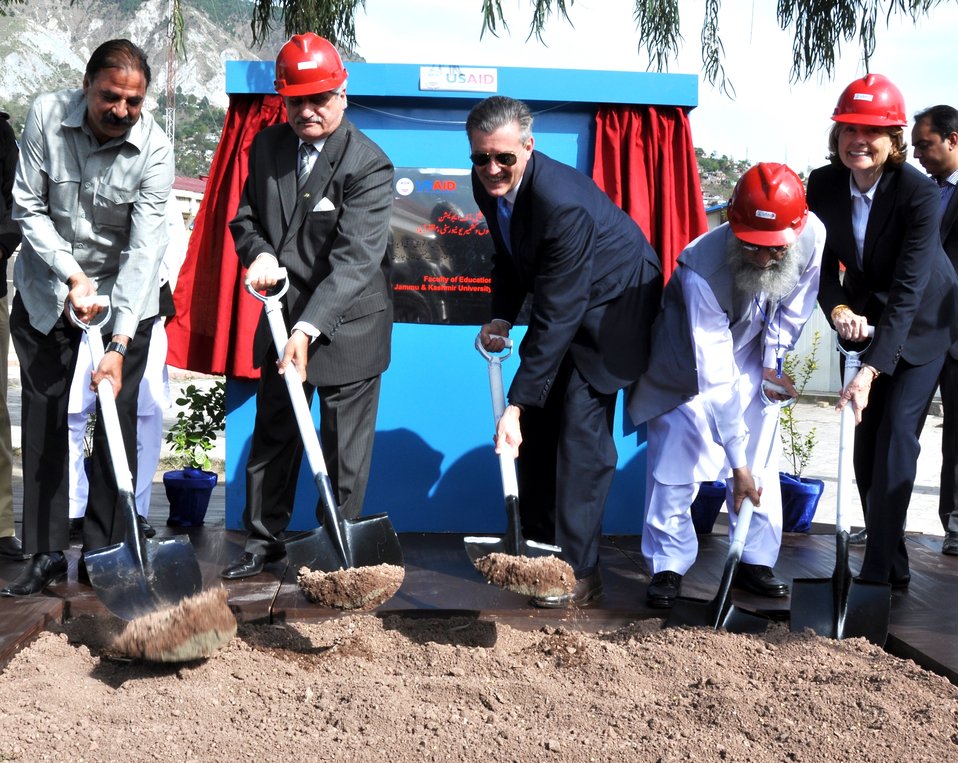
The United States Ambassador to Pakistan, Richard Olson broke ground for a U.S. funded construction of a new Faculty of Education building in Muzaffarabad, AJK. 19